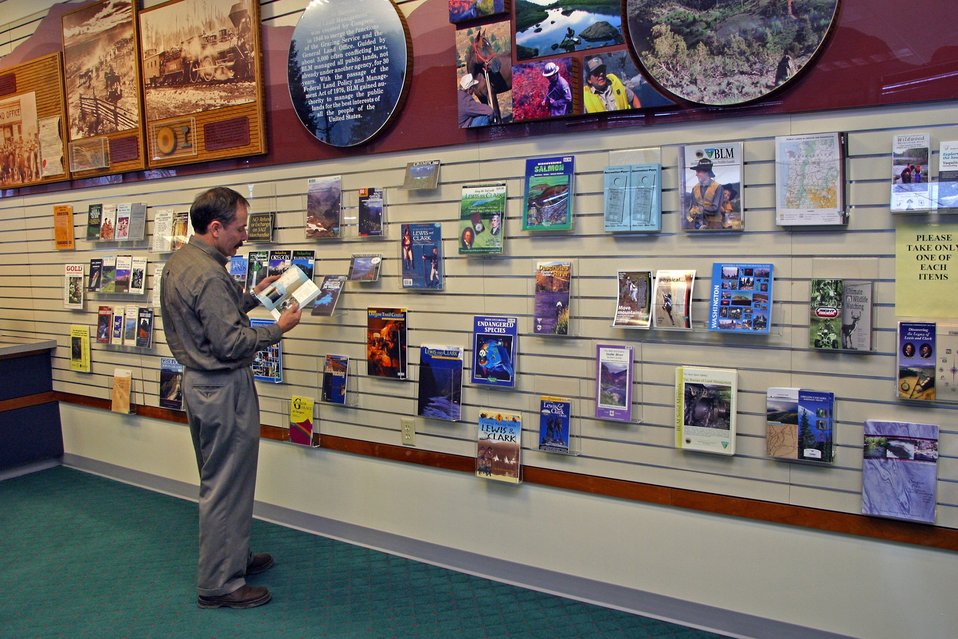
BLM's Land Office provides information about land status, minerals, maps, and general information to the public.